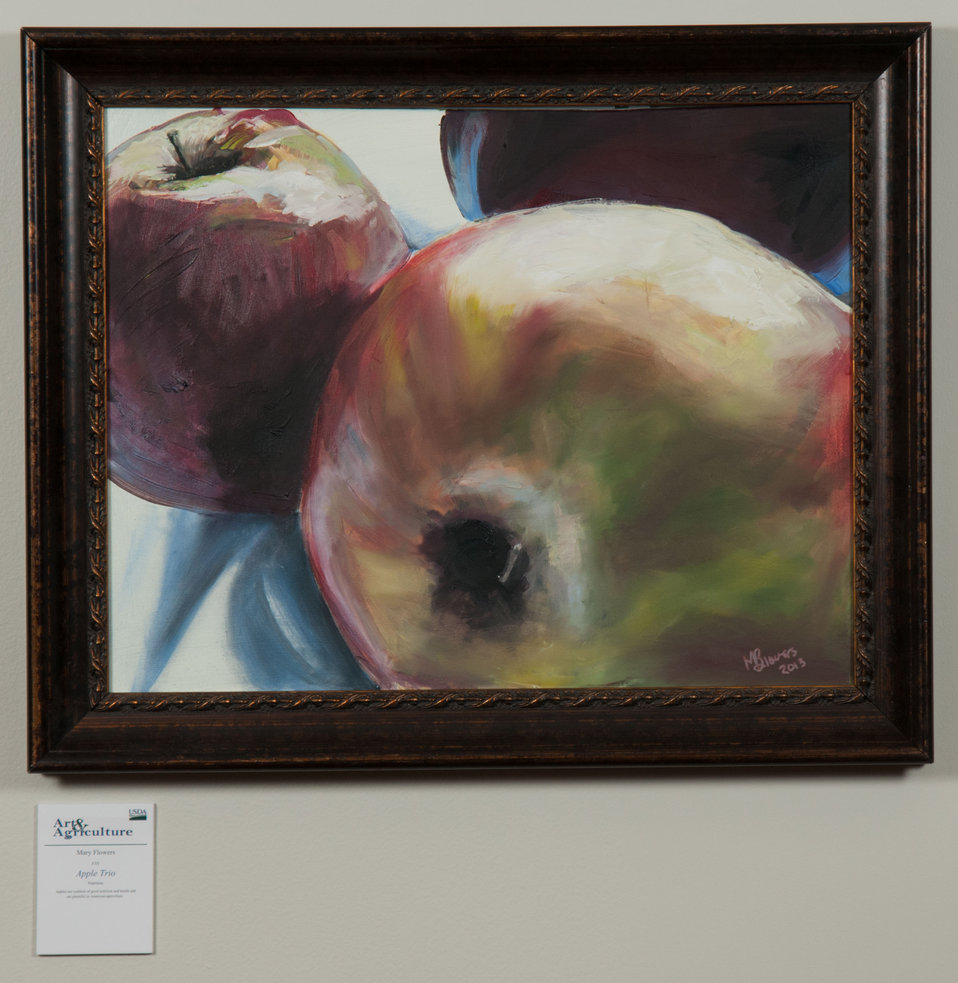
Online Viewer's Choice entries of the 2013 Art & Agriculture, Tuesday, July 9, 2013, in the South Building, Washington, D.C. Themes were expressed by employees from across the department and the contest was open to full-time and part-time USDA employees. Winning artwork will be displayed till the end of the year. U.S. Artistic expression is a creative outlet that is vital for an individual to grow and develop.